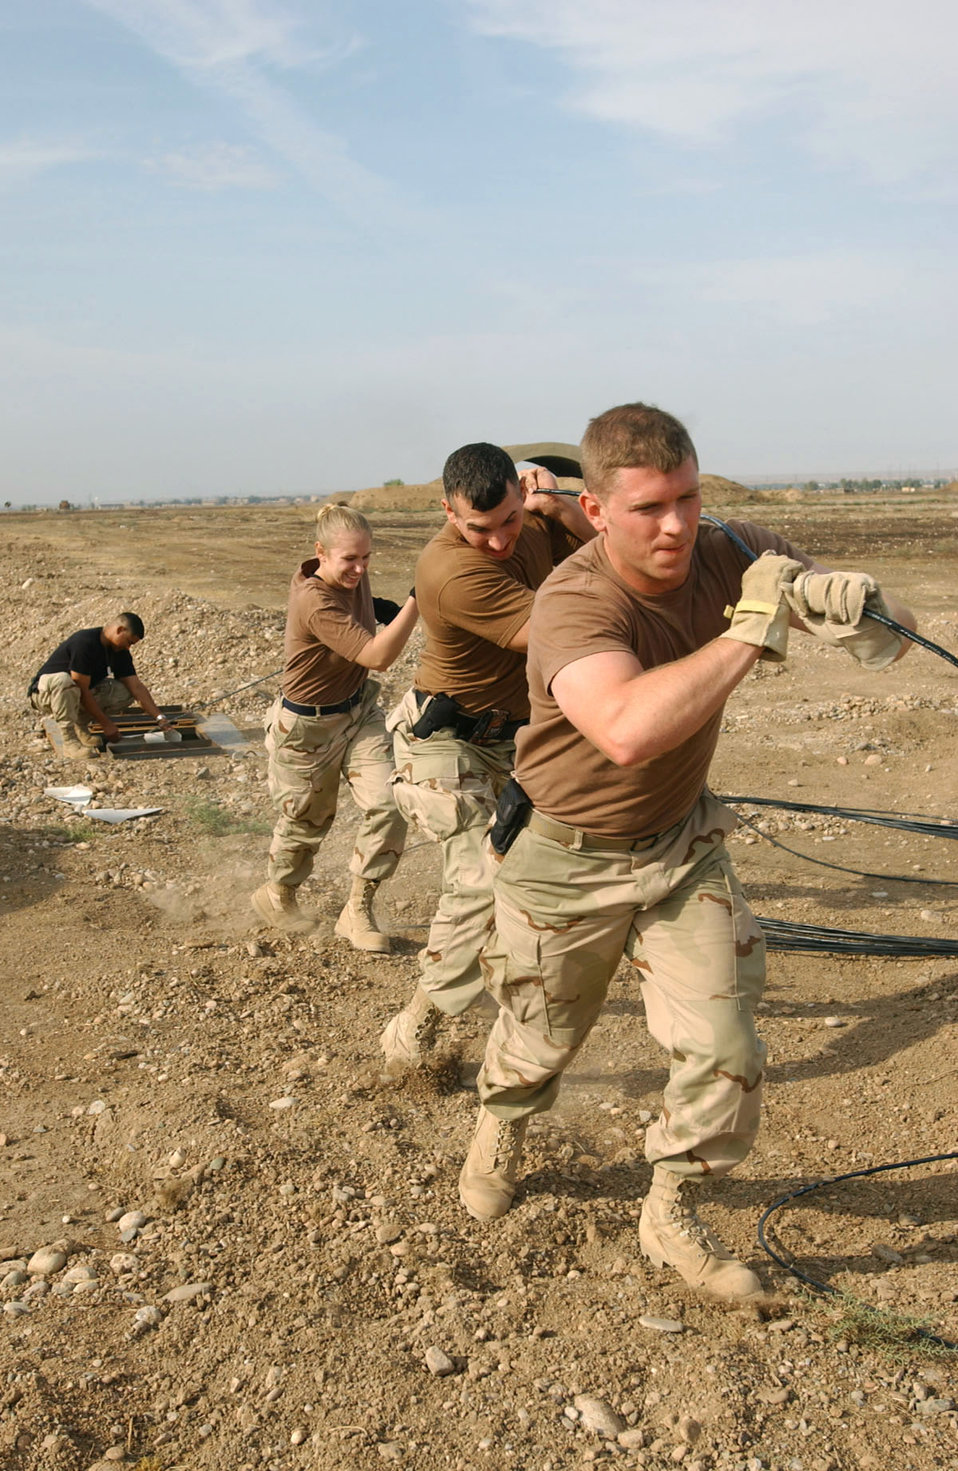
'Cable Dawgs' keep Kirkuk connected

KIRKUK AIR BASE, Iraq -- (From left) Staff Sgt. Jose Olivares, Airman 1st Class Crystal Bryant, Senior Airman John Dowalgo and 2nd Lt. Joseph Plank pull fiber optic cables during a communications upgrade project here. They are assigned to the 506th Expeditionary Communications Squadron.